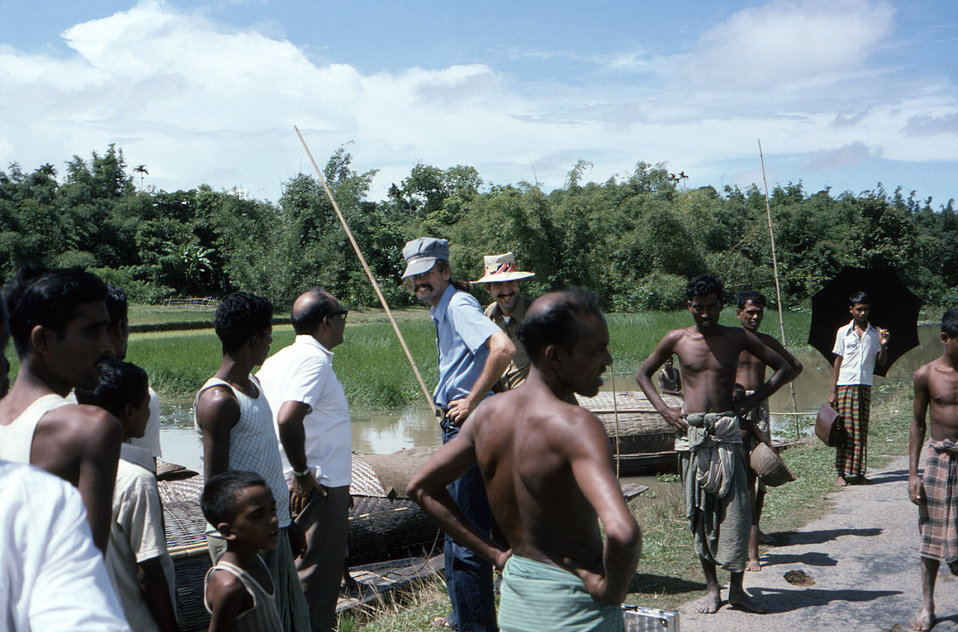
Wearing a blue shirt, this 1975 photograph depicted epidemiologist and instructor, Dr. T. Stephen Jones, while in the north-eastern Bangladesh District of Sylhet, leading the field training program, which would acquaint the three new field-workers with the protocols associated with the in-country smallpox eradication efforts. Here, the team had reached the end of this country road, and was about to begin the subsequent leg of the journey by boat.